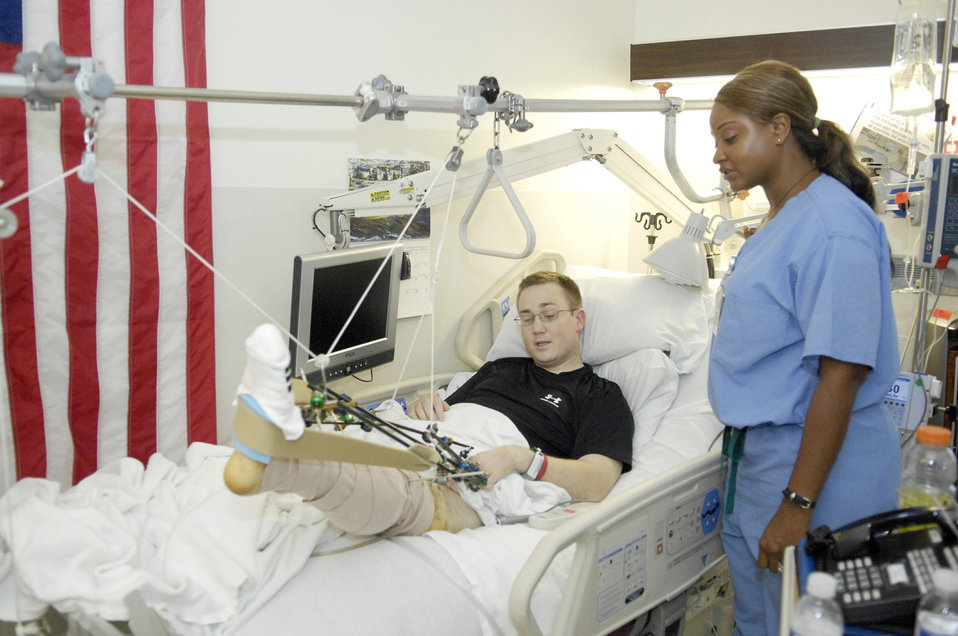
Wounded EOD technician has big plans

Staff Sgt. David Flowers gives nurse Latrice Perryman an update on his pain levels while she takes his vital signs in his room on Ward 57 June 23 at Walter Reed Army Medical Center in Washington, D.C. Sergeant Flowers is expected to be at Walter Reed at least a year for rehabilitation to learn to walk, drive and swing golf clubs with a prosthetic right leg.